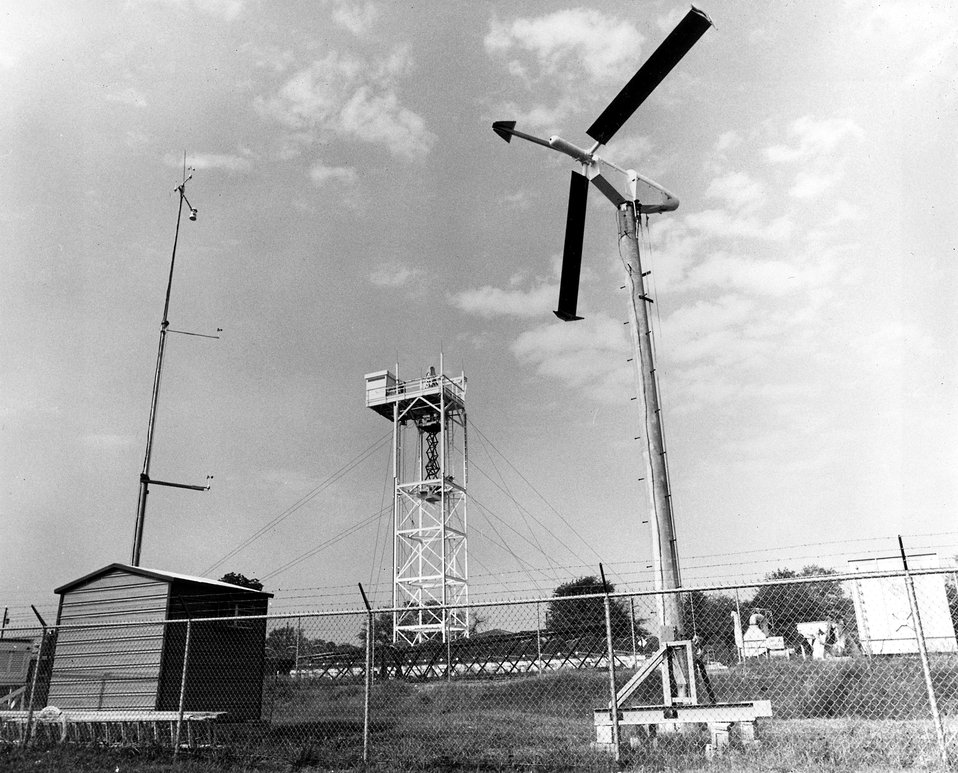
A 15 KW Gruman windstream electric generator has been installed on the Tech campus for purpose of obtaining wind data statistics, developing assessment methodology and investigating a variety of problems oriented to the eventual practical implementation of a WECS. c. 1979